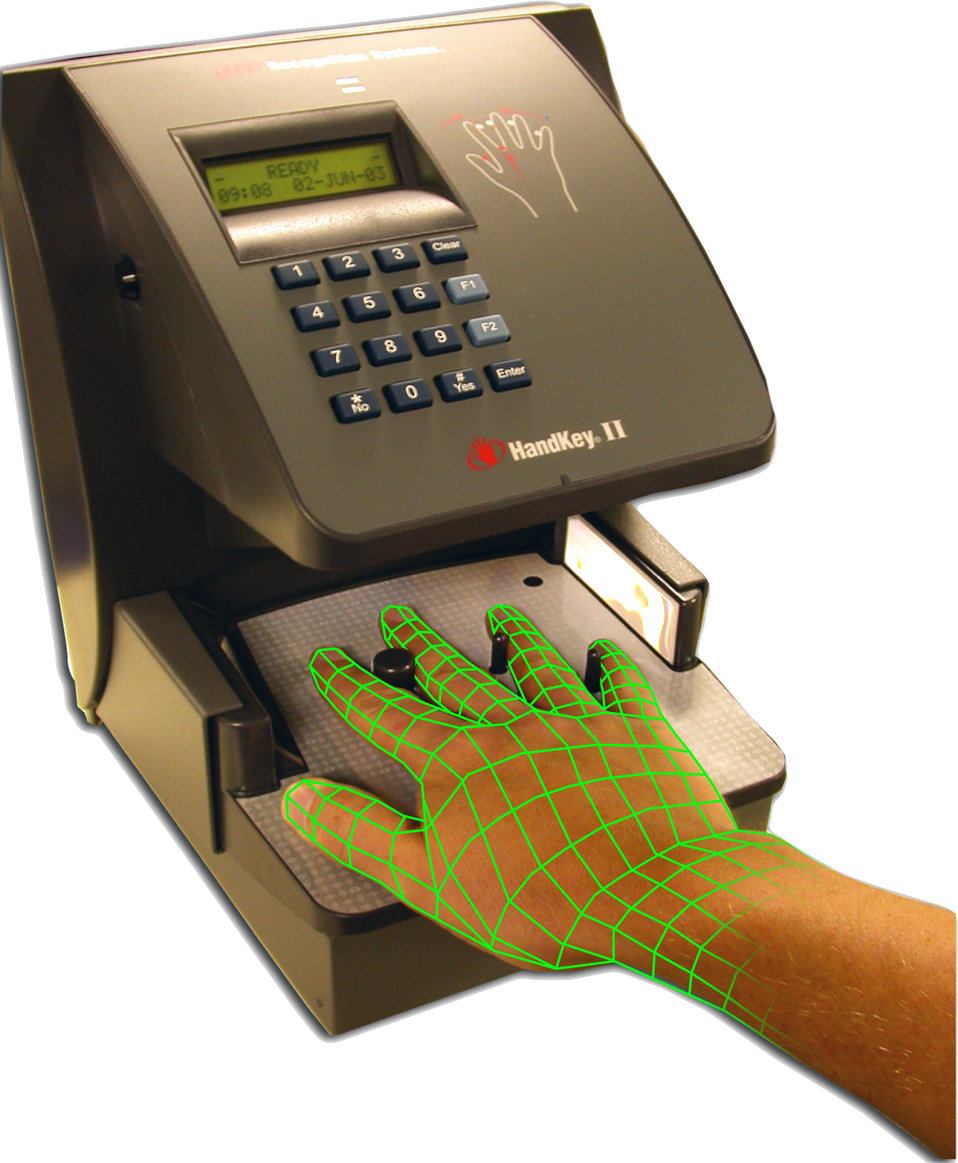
Hand scan

PHOTO ILLUSTRATION -- Privacy is not an issue with the hand scanner. The scanner senses the geometric shape of the hand, not the fingerprints.